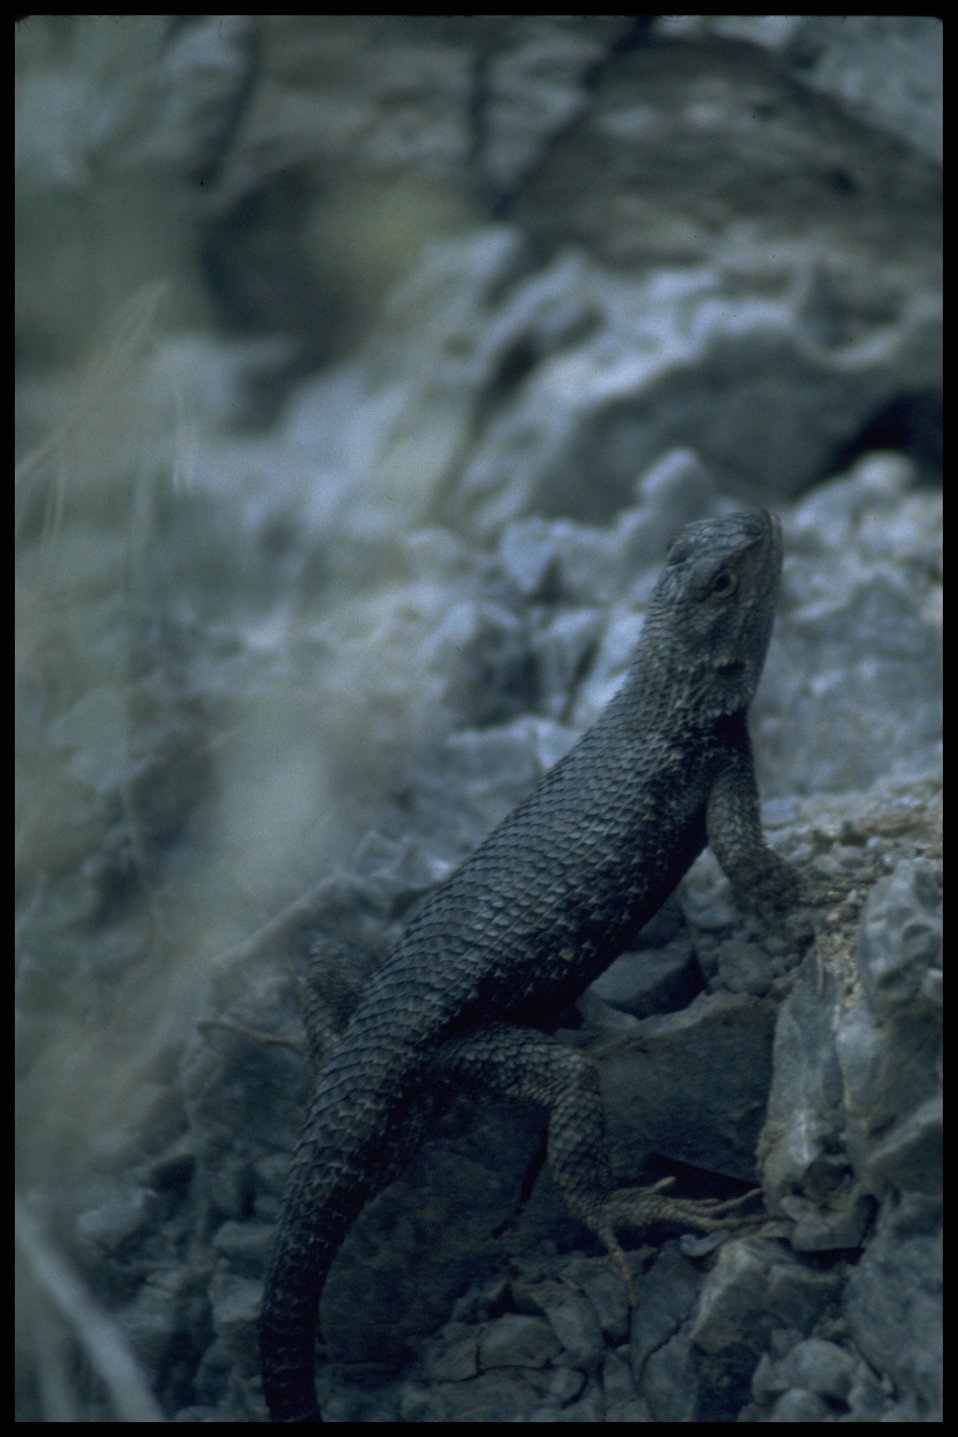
Lizard, Lakeview District.